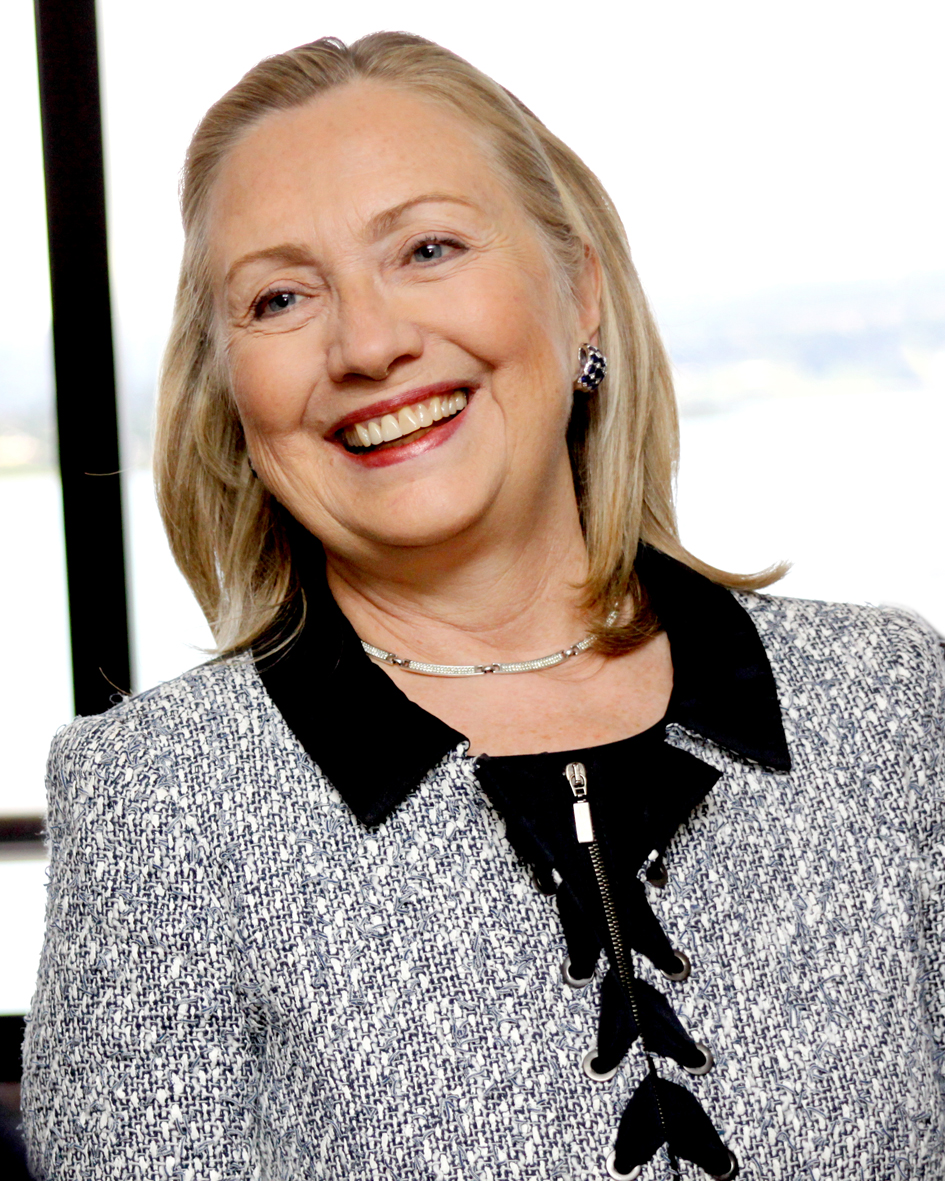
Secretary Clinton Meets With Petrobras CEO Graças Foster

U.S. Secretary of State Hillary Rodham Clinton meets with Petrobras CEO Maria das Graças Foster in Brasilia, Brazil, on April 16, 2012.